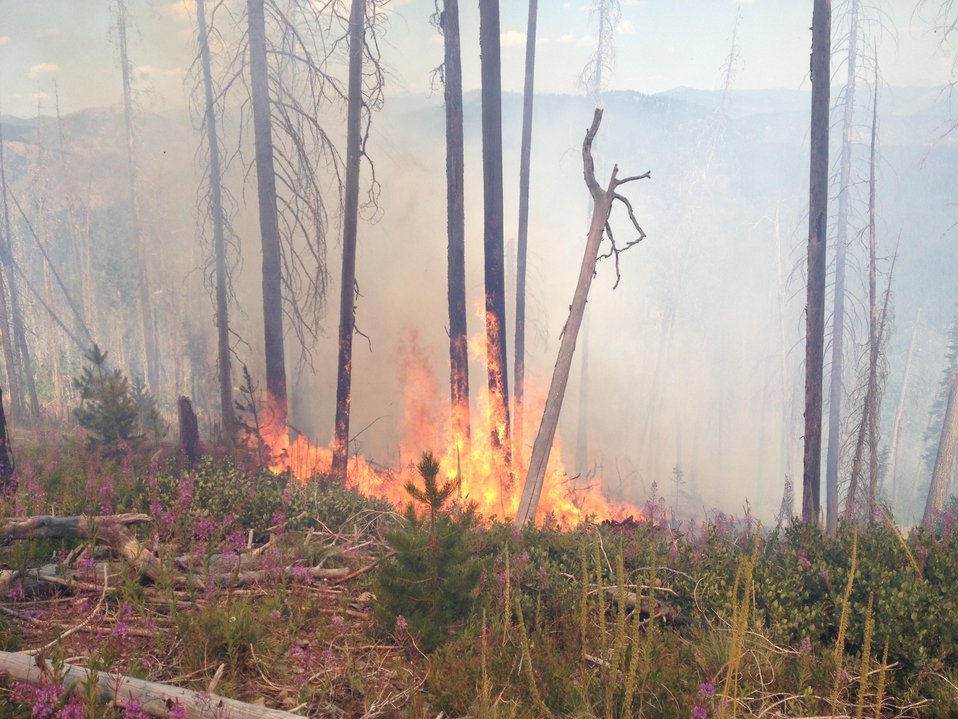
The Gold Pan Fire in the Bitterroot National Forest near Conner, MT began by lightning on Jul. 16, 2013 by lighting have consumed approximately 16,330 acres.